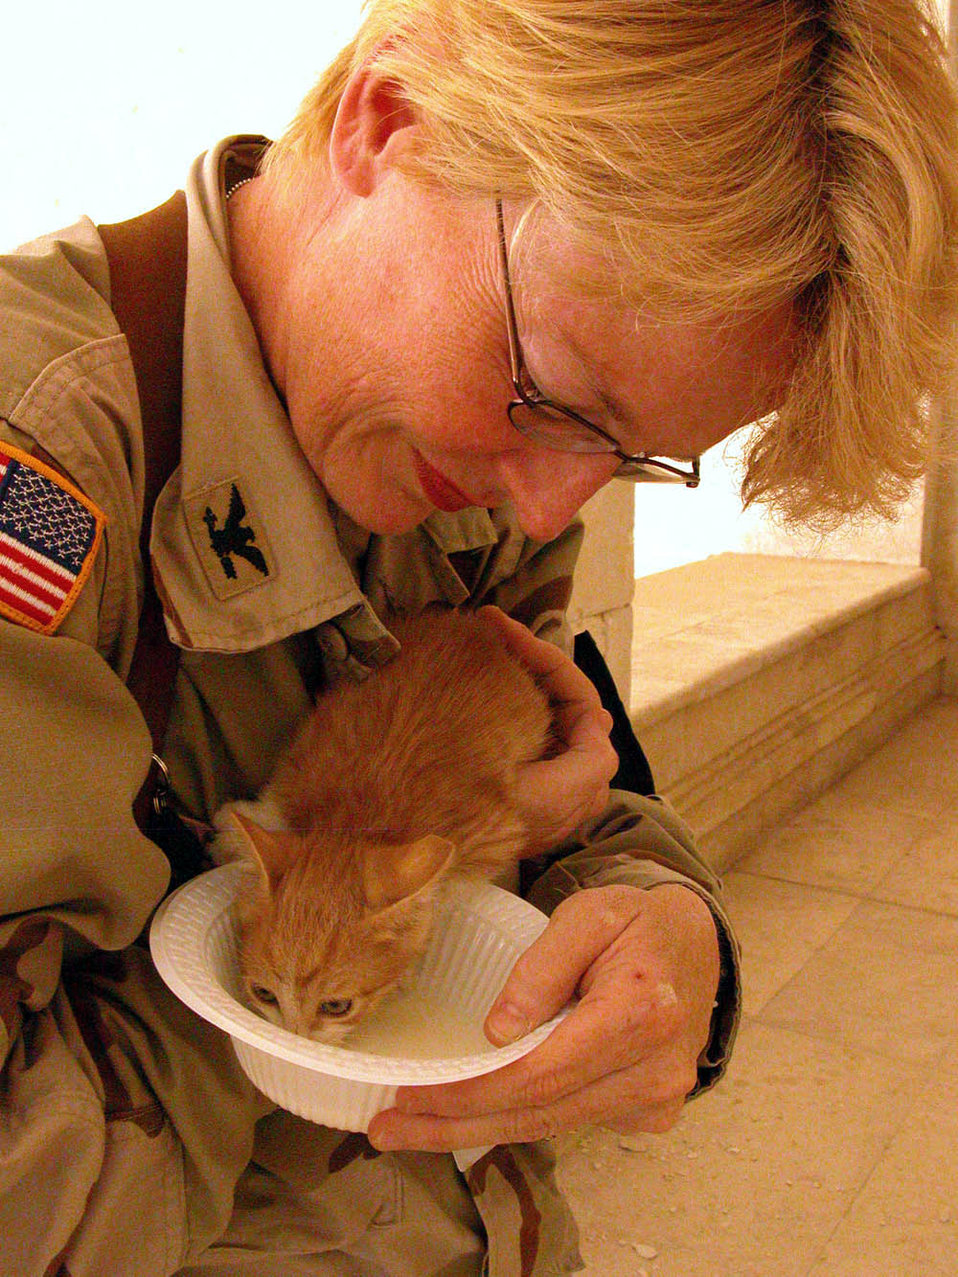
Here kitty, kitty

BAGHDAD, Iraq -- Col. Jill Morgenthaler offers Liberty some milk before preparing a new home for her out of a television box. Three pest control managers climbed the Al Faw Palace ceilings and chipped away at the base of a patio column to rescue the trapped kitten. Colonel Morgenthaler is a public affairs officer for Mulitnational Forces-Iraq.